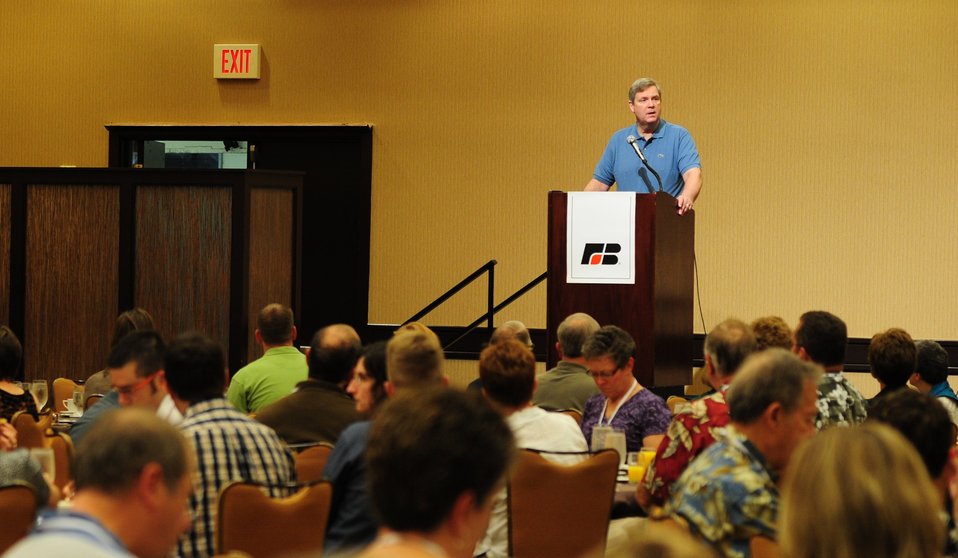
Agriculture Secretary Tom Vilsack speaks at the Iowa Farm Bureau event at the Sheridan Waikiki, in Honolulu, Hawaii, on Sunday, January 8, 2012.